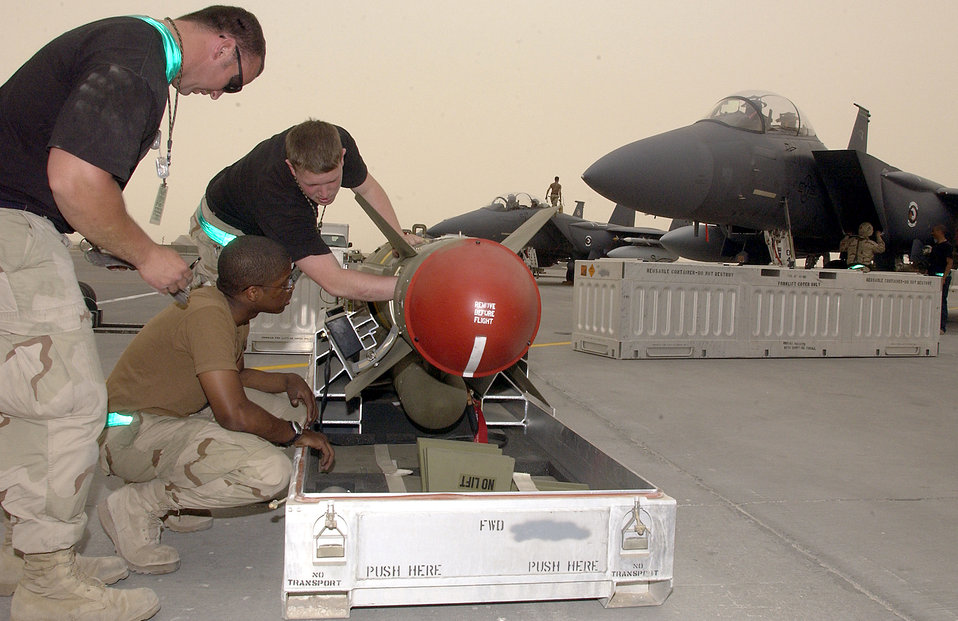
Mission loading

SOUTHWEST ASIA -- Bomb loaders from the 335th Expeditionary Fighter Squadron prepare to mount the AGM-130 to an F-15E Strike Eagle for a mission at a forward-deployed location on March 21, 2003. The Strike Eagles from Seymour Johnson Air Force Base, S.C., are deployed in support of current operations in the Middle East.